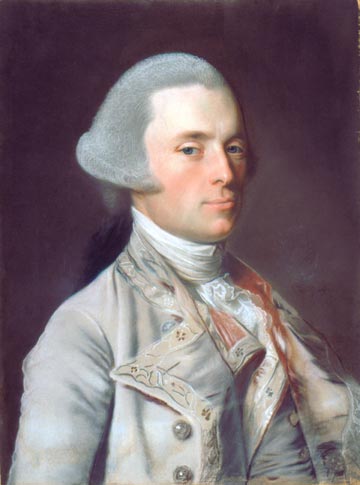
Governor John Wentworth